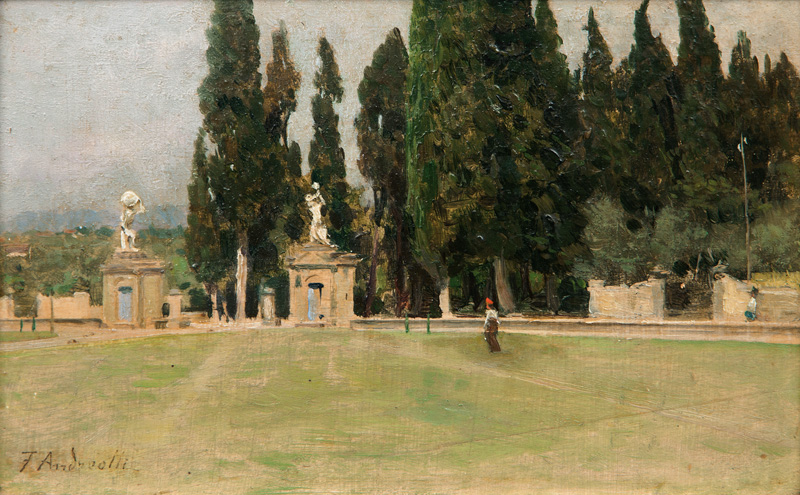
Piazzale Poggio Imperiale, Öl auf Holz, 9 x 15 cm